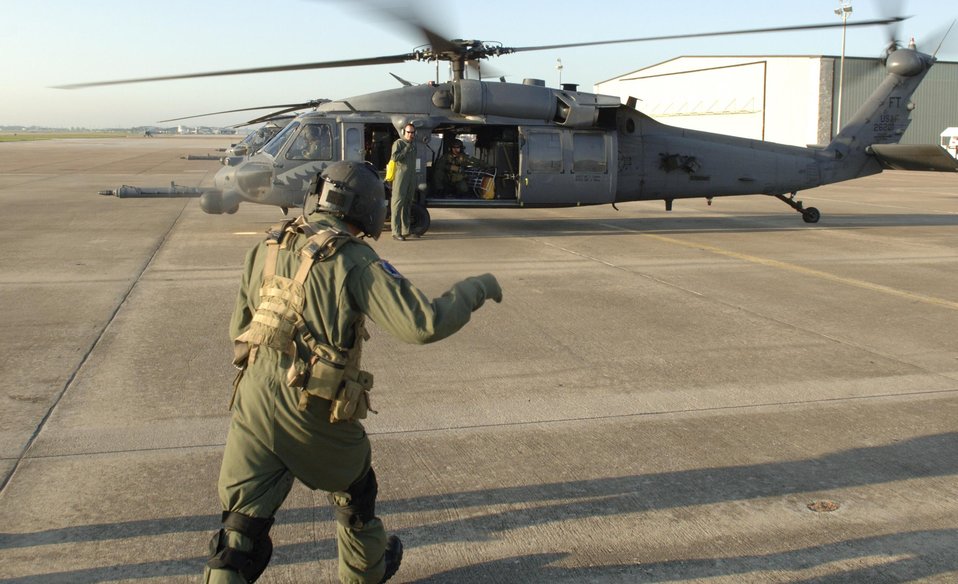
Rescue squadrons provide support for Hurricane Gustav

Crewmembers from the 55th Rescue Squadron perform preflight checks on a HH-60 Pave Hawk Sept. 3 at Ellington Field, Texas. The squadron deployed from Davis-Mothan Air Force Base, Ariz., to Ellington Field in response to Hurricane Gustav with less than 24 hours after notification.